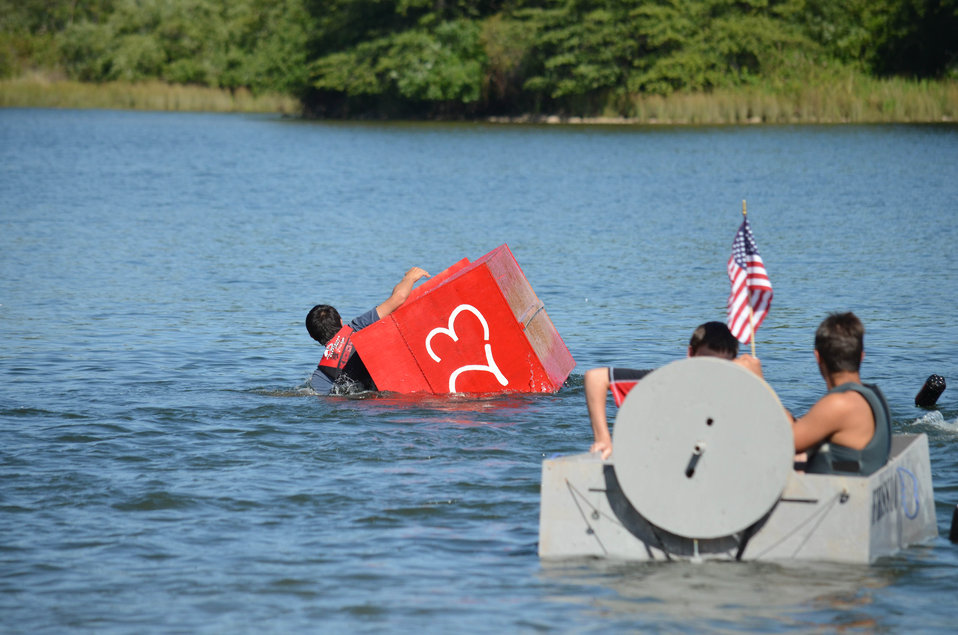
District employees judge annual Folsom High School Regatta

Students look on as another boat flips during the Folsom High School Regatta at Negro Bar State Park in Folsom, Calif., May 24, 2013. High school and middle school students constructed boats from cardboard, plywood, or other buoyant materials to compete in the race.